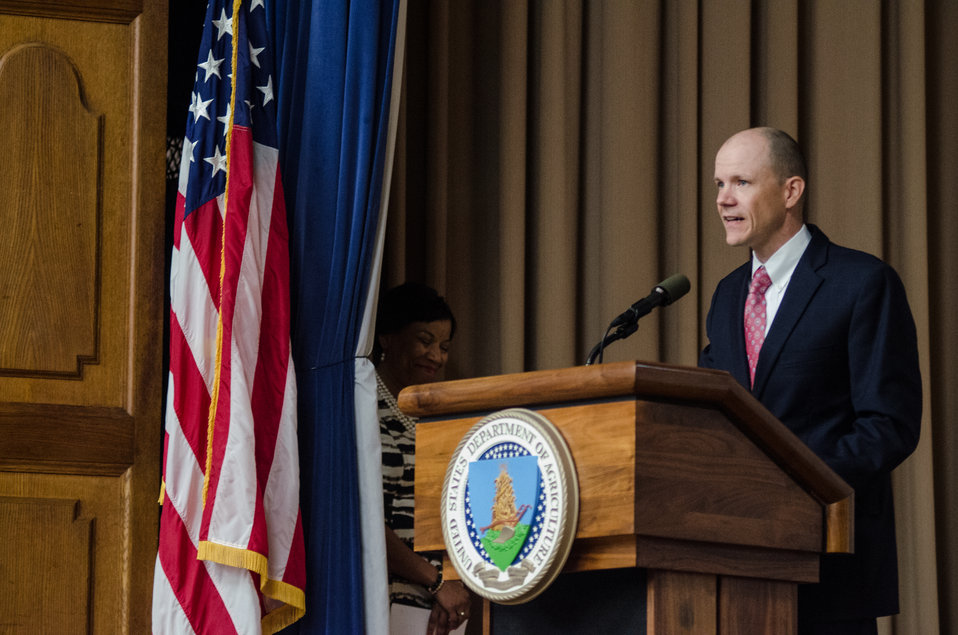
U.S. Department of Agriculture (USDA) Rural Development’s (RD) Acting Under Secretary Doug O'Brien speaks at the 2nd Annual Cultural Transformation kickoff opening ceremony and forums, themed “Employees Influencing Change,” on Tuesday, Aug. 13, 2013 at USDA in Washington, D.C.